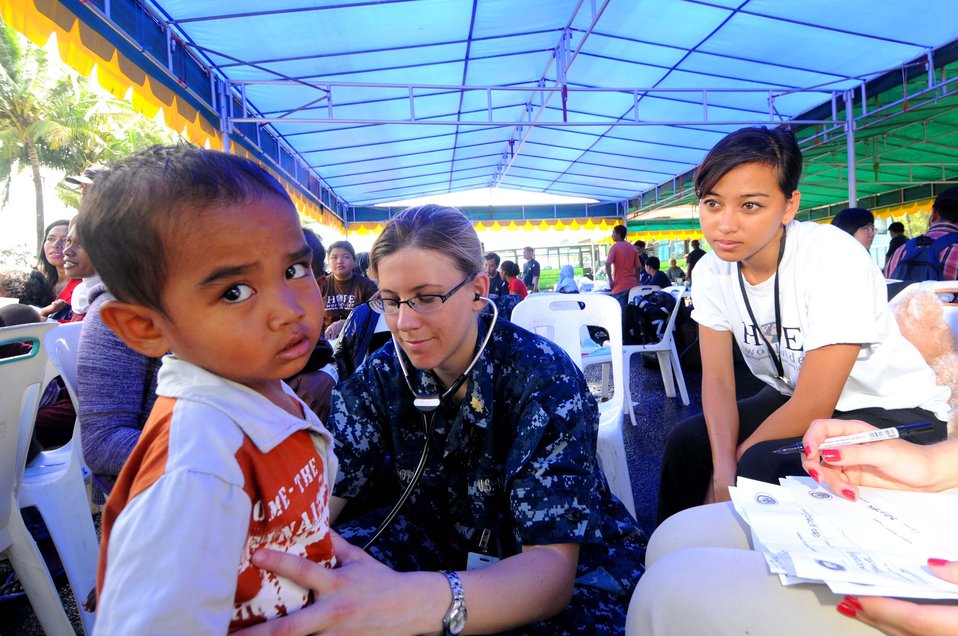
Lt. (Dr.) Stacy Dodt Examines a Young Indonesian Patient

Lt. (Dr.) Stacy Dodt, currently embarked with the Military Sealift Command hospital ship USNS Mercy (T-AH 19), examines a young Indonesian patient during a medical civic action program in Abmon, Indonesia, on July 27, 2010. The Military Sealift Command hospital ship USNS Mercy (T-AH 19) is in Ambon participating in Sail Banda 2010, a series of events hosted by the Government of Indonesia to promote the future of small islands. Mercy’s participation features medical and dental care clinics and construction projects in and around Ambon, as well as on Seram Island.